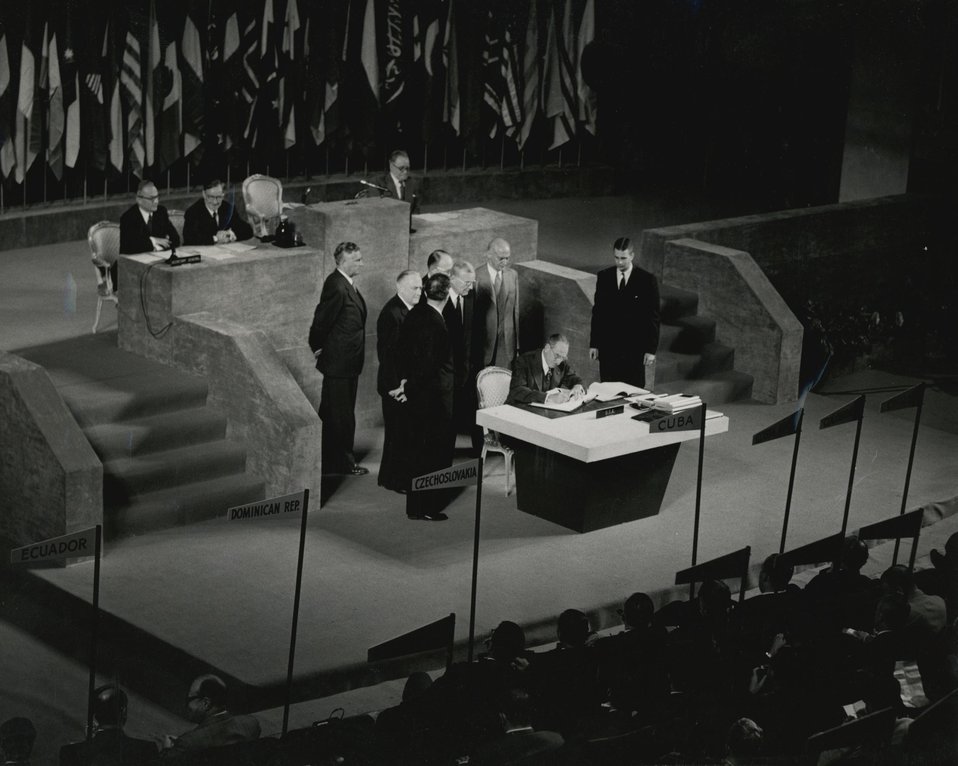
U.S. Secretary of State Dean Acheson signing the Treaty of Peace with Japan, September 8, 1951

Fourty-nine nations signed the Treaty of Peace with Japan in San Francisco on September 8, 1951. The treaty officially ended World War II and set the terms of peace with Japan.